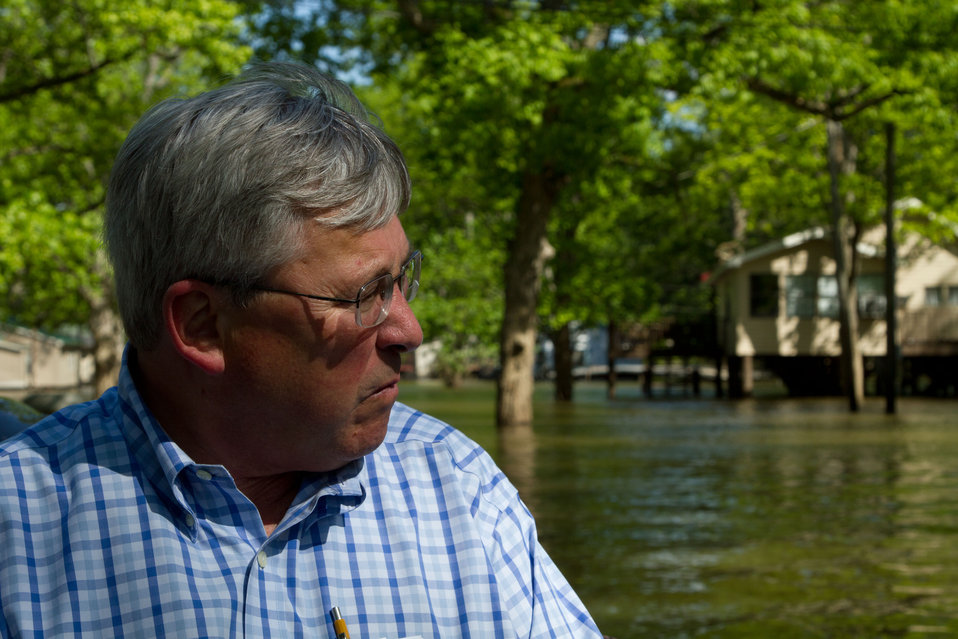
Lauderdale County Mayor Rod Schuh has to use a motorboat to survey the river flood and impact on the people and property of his county in Tennessee, on Saturday, May 21, 2011. The County is bordered on three sides by the Mississippi and two other rivers. Today’s task was to look at as many of the approximately 300 homes in the river basin as possible.